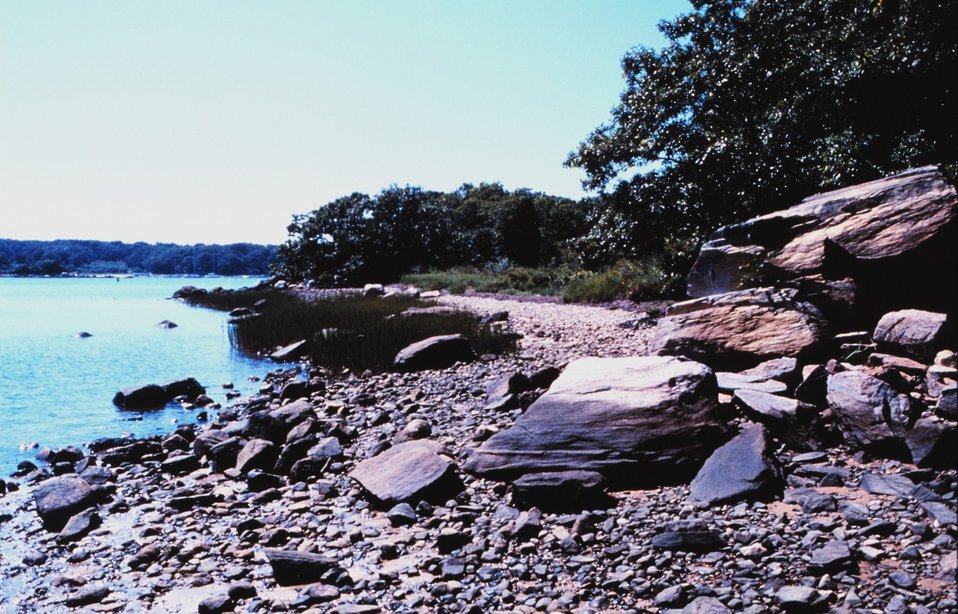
Quissett Harbor, Woods Hole, Falmouth